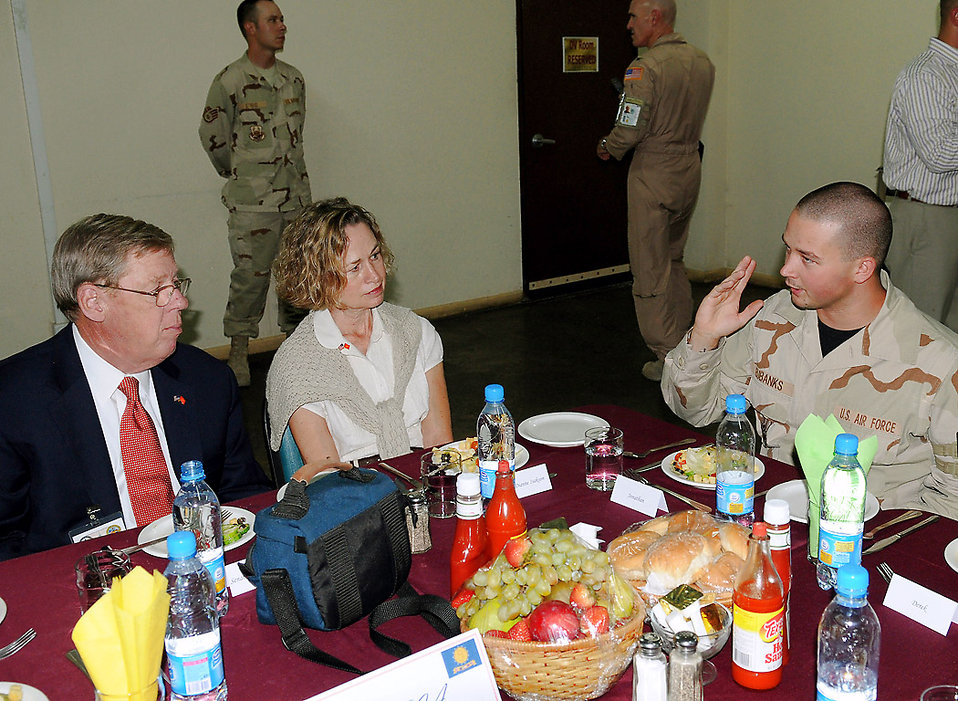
Congressmen visit servicemembers in Manas

Sen. Johnny Isakson and his wife, Diane, talk with Senior Airman Jonathan Eubanks, a Macon, Ga., native deployed to Manas and assigned to the 376th Expeditionary Logistics Readiness Squadron. The Georgia senator and four others visited Manas, Aug. 5, as a part of an eight-day congressional delegation trip to promote security, democracy and development in central Asia. While at Manas, the senators visited with deployed Airmen and learned about the wing's mission as an air mobility hub supporting operations in Afghanistan.